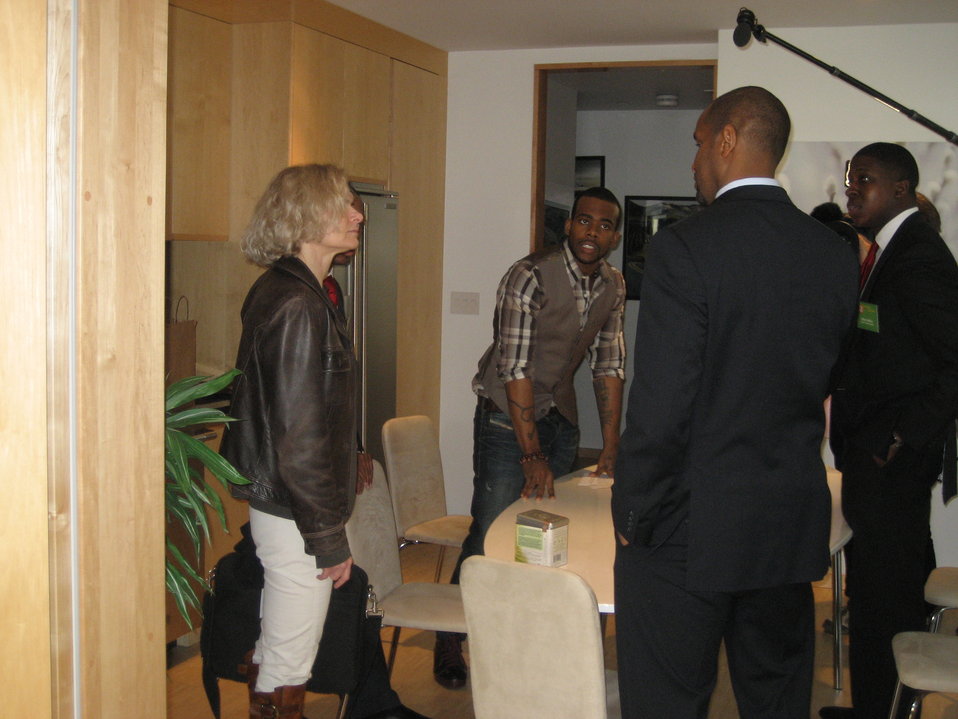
Mentor 29